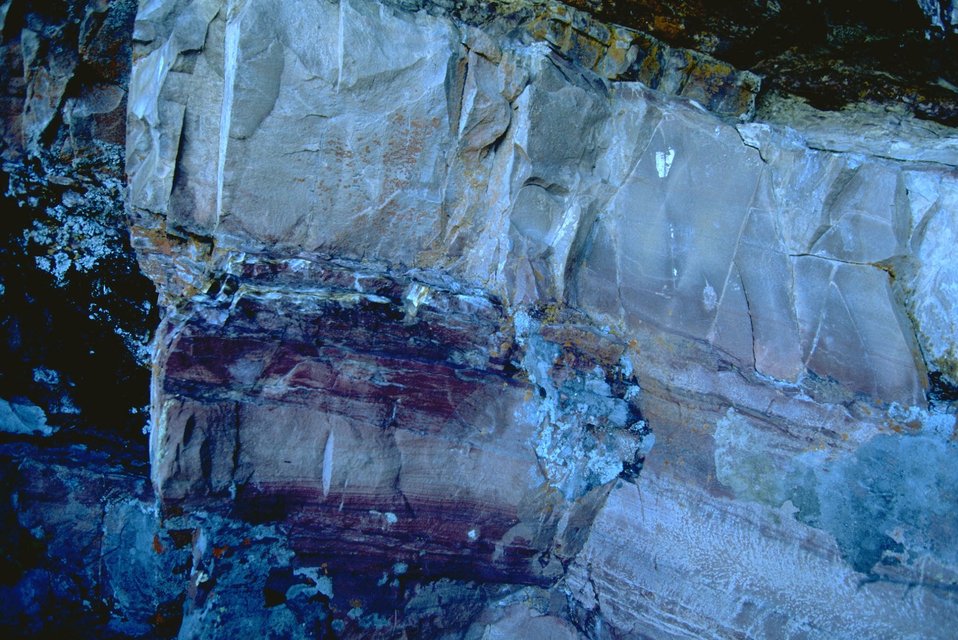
Rocks with lichen/algae growth